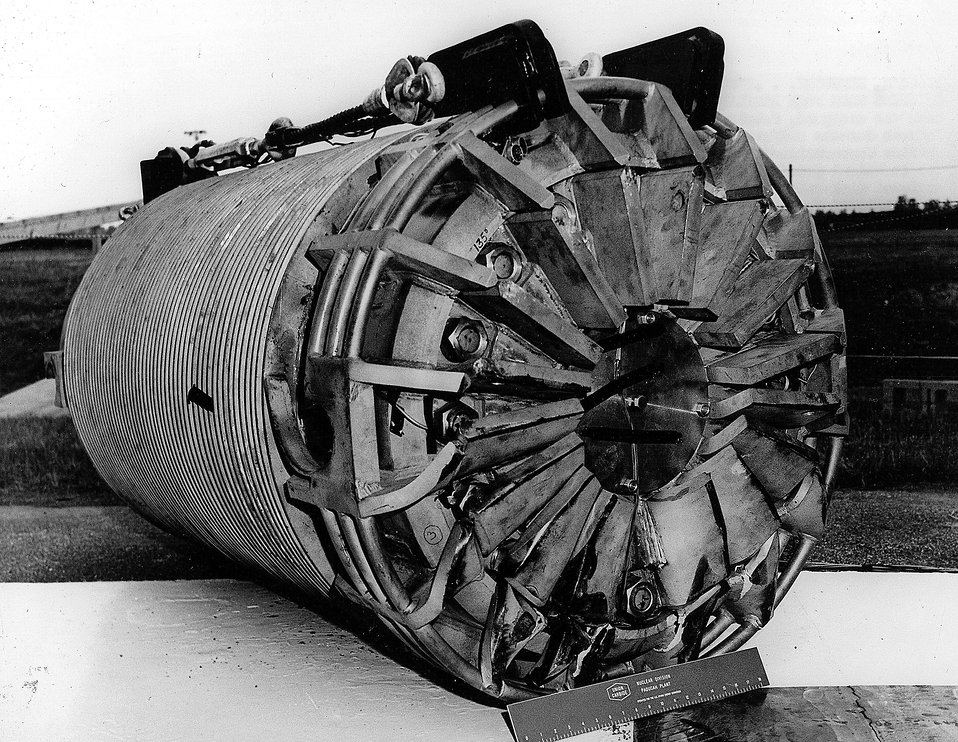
This cask was designed, fabricated, and tested by the Paducah Gaseous Diffusion Plant, operated by Union Carbide Corporation-Nuclear Division, to demonstrate the technical feasibility and economic factors associated with using uranium as the shielding material in irradiated fuel shipping casks. Circa 1968.